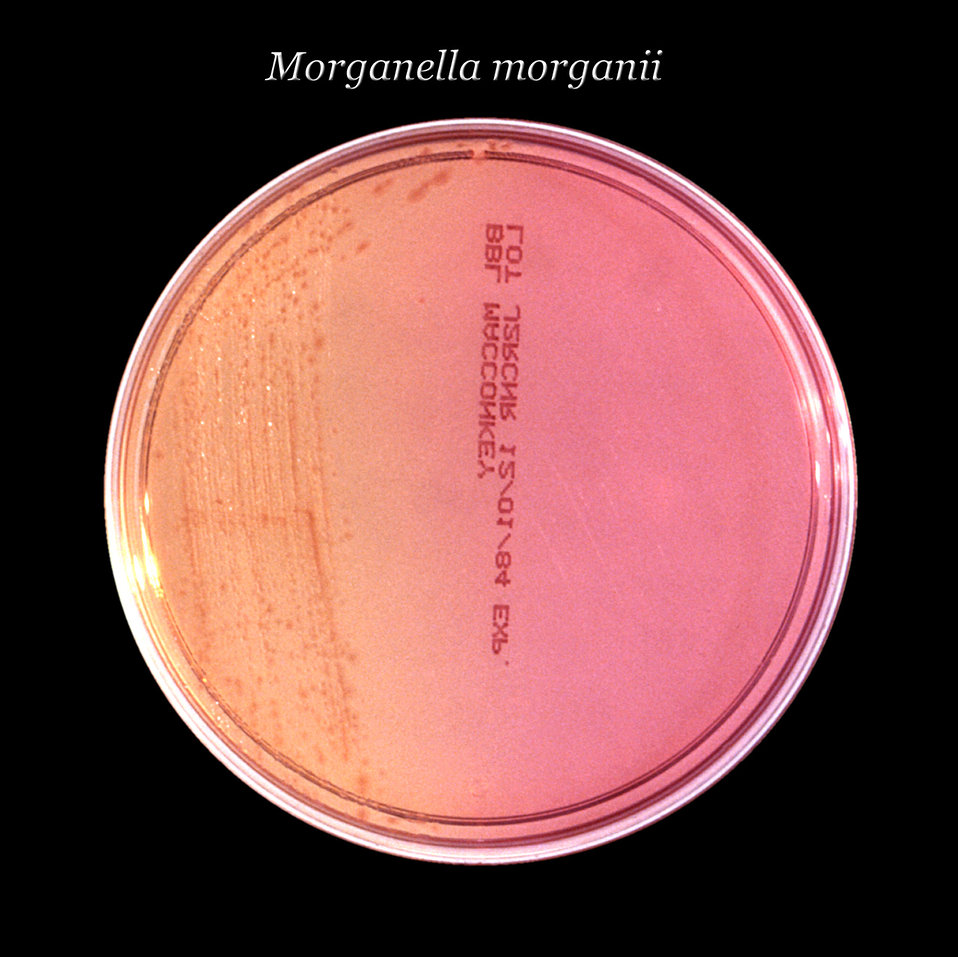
After 24 hours, this inoculated MacConkey agar culture plate cultivated colonial growth of Gram-negative, motile rod-shaped and facultatively anaerobic Morganella morganii nonencapsulated bacteria.